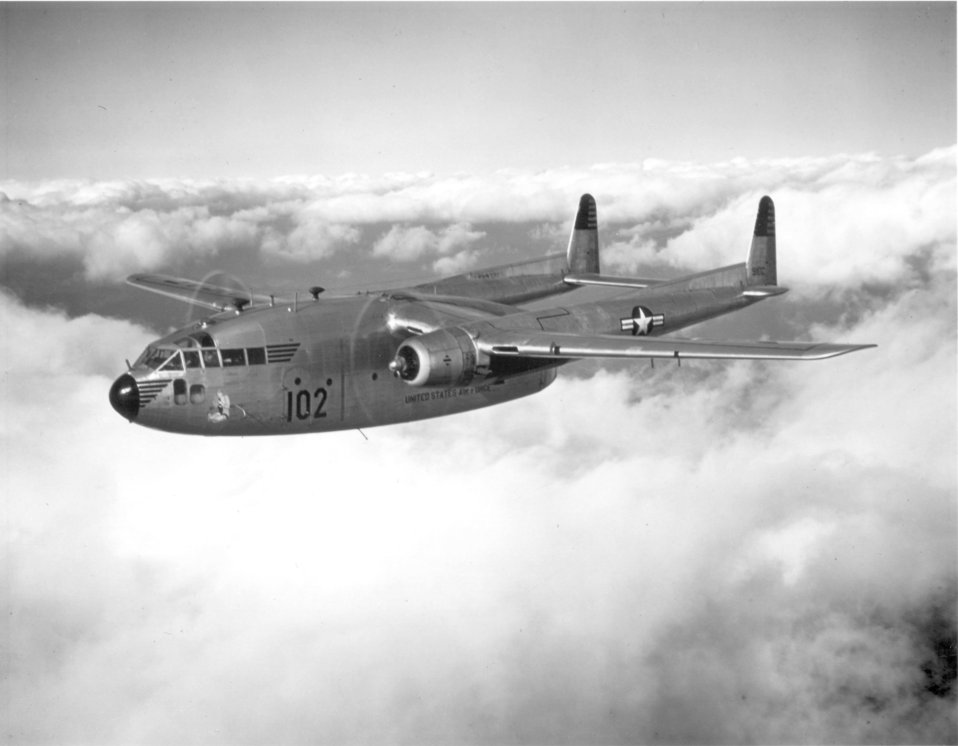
C-119

1950's -- C-119 Flying Boxcars from the 314th Troop Carrier Group in Japan do not fly to Korea unless weather reports are good. They must be able to see the tiny drop zone for combat cargo on the peak before they can drop. In radio contact with the